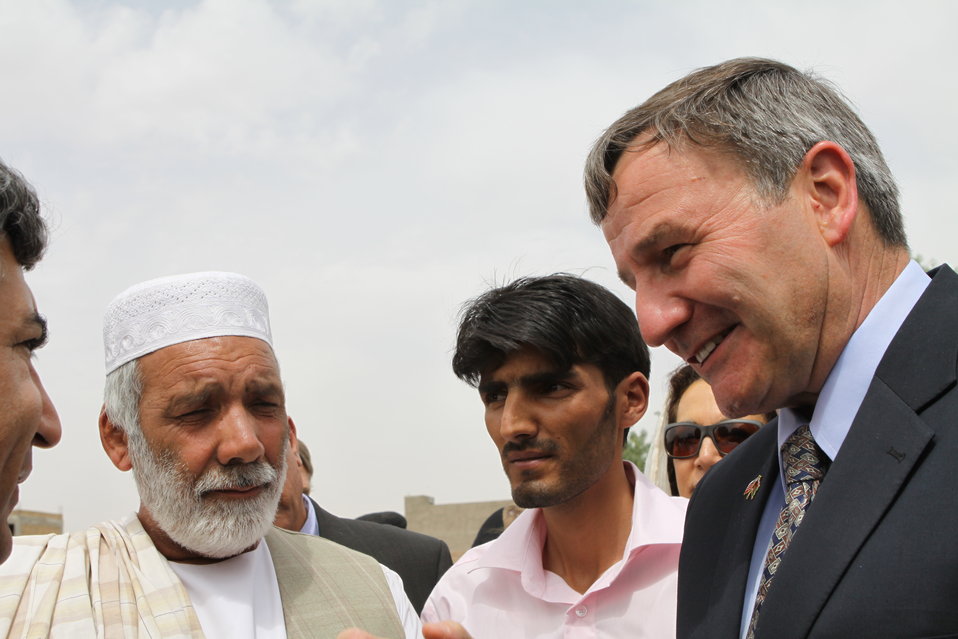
100525 Hirat Marble Conference 629